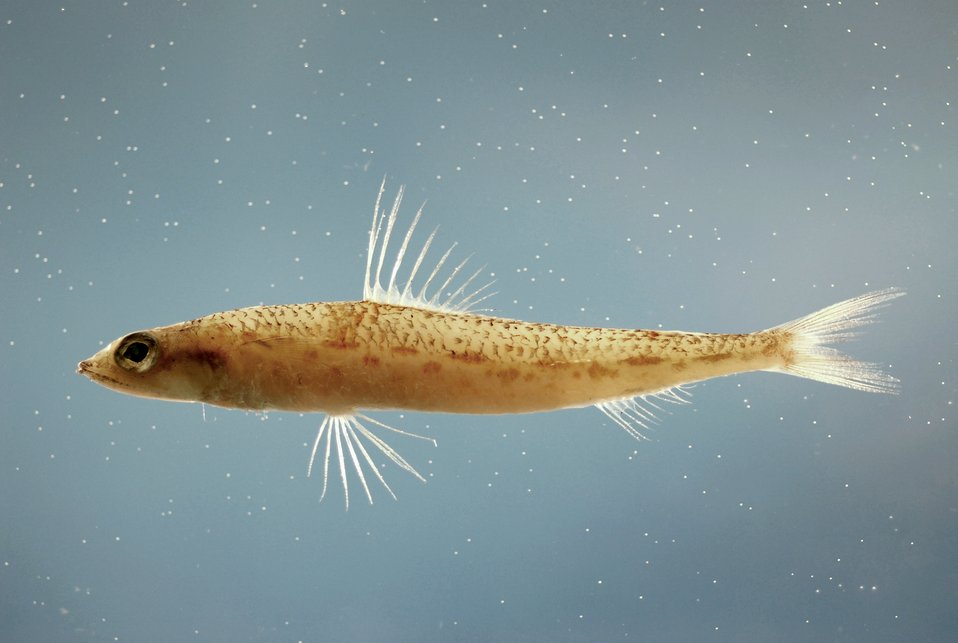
Offshore lizardfish ( Synodus poeyi )